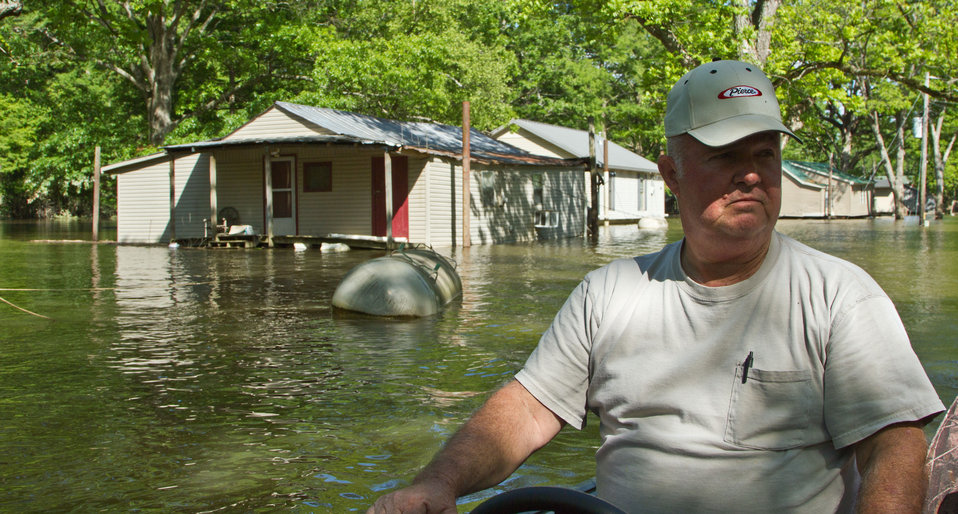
Lauderdale County Disaster Management Director Jim Jarrett uses a motorboat to survey the river flood and inundation impact on the people and property of this county in Tennessee, on Saturday, May 21, 2011. Homes here are constructed either on stilts; or float on Styrofoam blocks and are tethered to stationary poles. Most homes on floats survived well, but needed extensions welded to the poles before the rivers crested. The one seen to the left of Jarrett might have malfunctioned and became partially submerged and it's propane tank went adrift. The Mississippi and two other rivers border Lauderdale County on three sides. Today’s task was to look at as many of the approximately 300 homes in the county's river basin as possible. This area is near Open Lake.